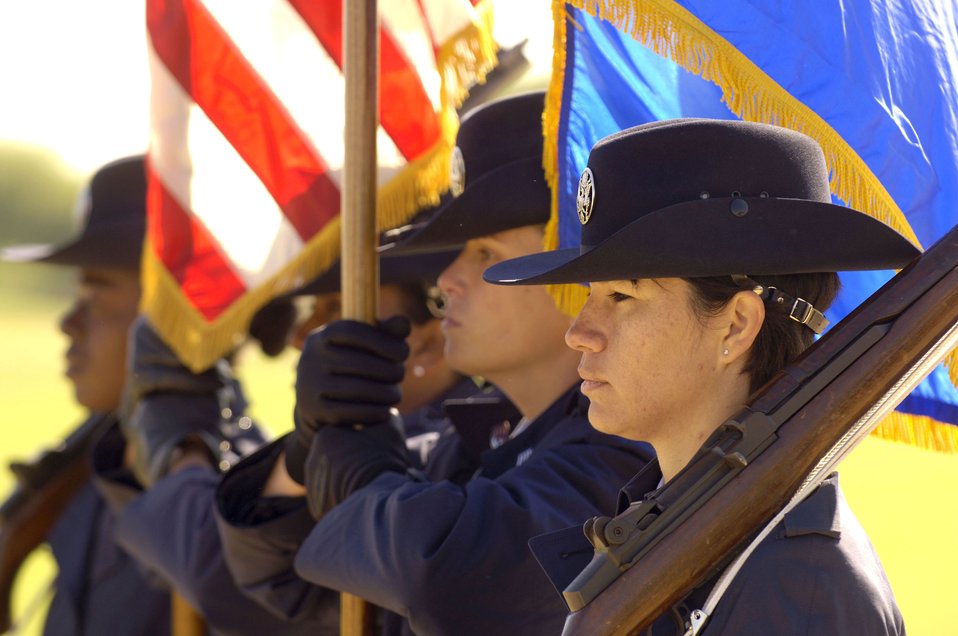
Profession of Arms

The all-woman color guard detail of Staff Sgts. Angie Hernandez-Torres and Rhonda Jeter, Tech. Sgt. Matilda Mahone and Senior Airman Tamika Masters lead the parade at the basic military training graduation ceremony, Friday, March 24, 2006, at Lackland Air Force Base, Texas, that honored the legacy of women who served in the Women's Air Force and all women who have shared in the profession of arms.